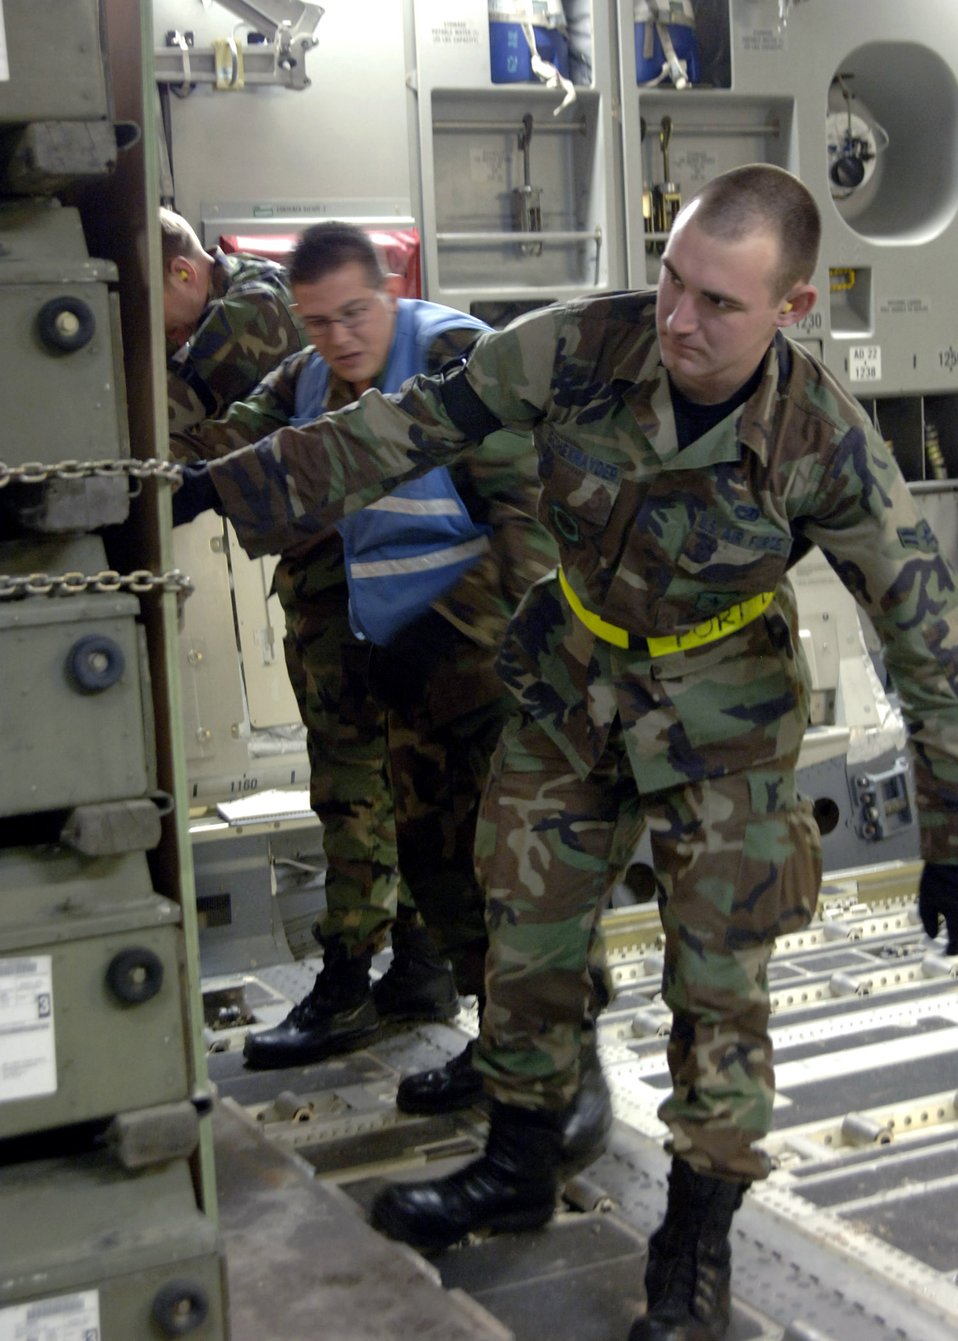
Turkey partners with U.S. in war on terrorism

Airman 1st Class Chase Schexnayder and Senior Airman Rolando Rivera position helicopter rotor blades on a C-17 Globemaster III assigned to the 385th Air Expeditionary Group April 16 at Incirlik Air Base, Turkey. Turkish supplies including two helicopters, an ambulance, a tractor and numerous shipping containers were transported from Incirlik AB to Kabul AB, Afghanistan. The Airmen are assigned to the 728th Air Mobility Squadron.